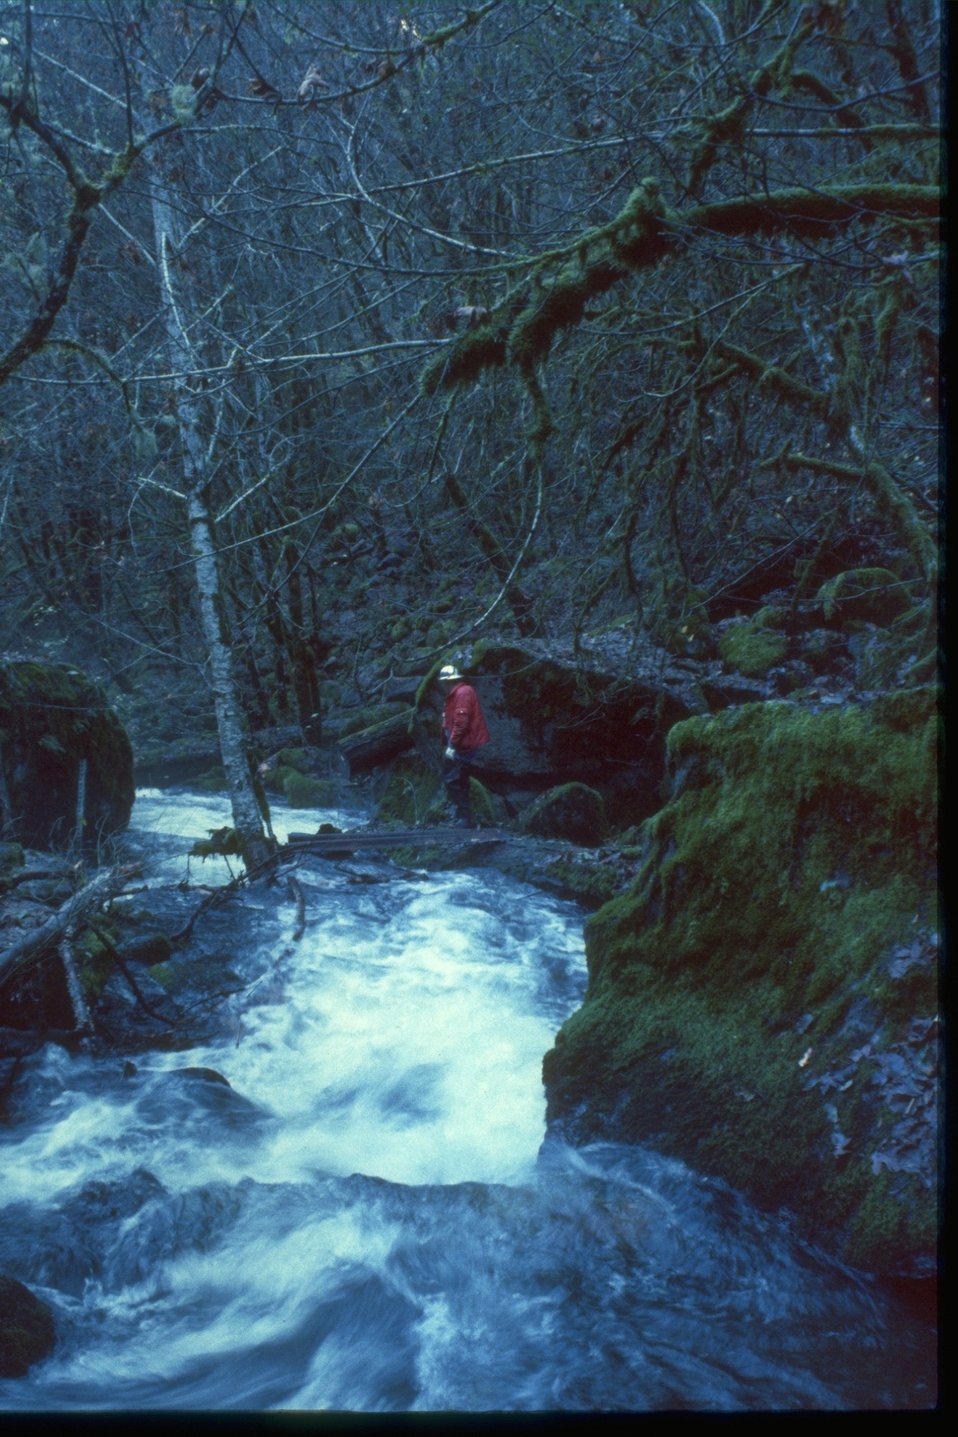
Fish Biologist surveys stream.